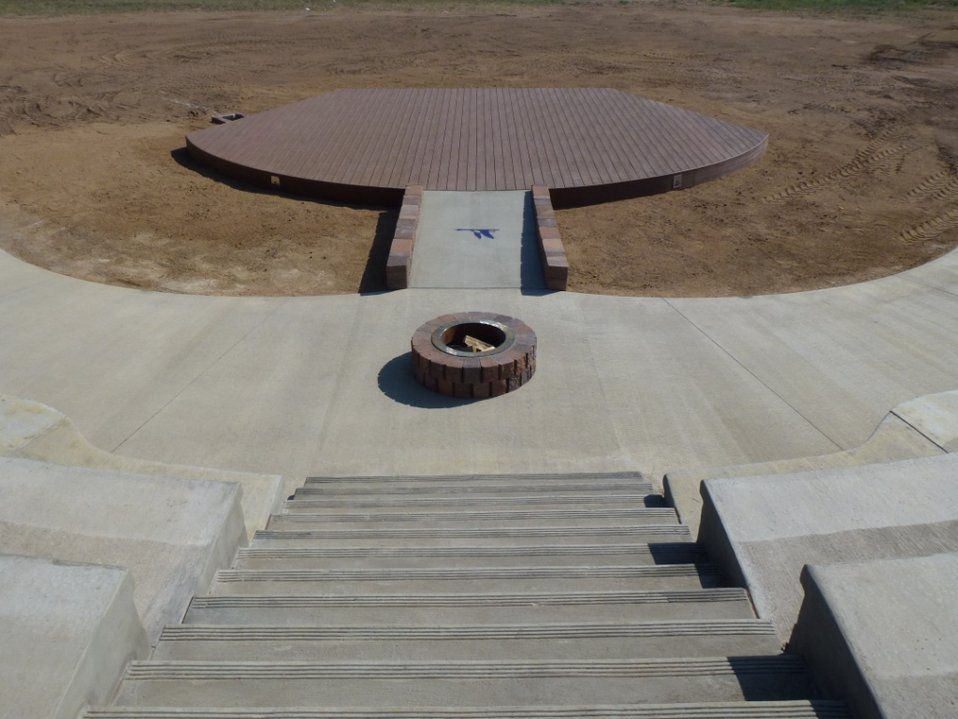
Rocky Mountain Arsenal National Wildlife Refuge’s Amphitheater

Thanks to the work of a Mountain-Prairie Region Refuge Maintenance Action Team (MAT), a new amphitheater was recently erected adjacent to the Rocky Mountain Arsenal National Wildlife Refuge’s visitor center in Commerce City, Colo.

The amphitheater is a fully accessible facility with seating for 175 to 200 spectators. It features a stage and fire pit for special programs. The addition of the amphitheater to the visitor center will enhance interpretive program delivery as part of the facility’s regular visitor services and will be used for special events. Commerce City has also expressed an interest in using the amphitheater for programs of its own.

The project was completed under budget and cost nearly half as much as the bids received from private contractors. According to rough estimates, the U.S. Fish & Wildlife Service saved approximately $70,000. The substantial cost savings was realized by employing the MAT, which is comprised of in-house maintenance workers with various skill sets from several stations across the region. Typically, deferred maintenance dollars pay for the project materials, labor, travel, room and board of MAT members. MAT projects usually take between one to five weeks to complete.

Construction began May 7, 2012 and concluded June 13, 2012 with a one-week pause in the middle of the project to allow MAT members a break. In total, the project took 34 12-hour-work days. The MAT worked more than 2,000 man hours on the project with no time lost due to injury or any safety-related issues.

The Refuge MAT consisted of:
• Rich Iwanski – Bear River Migratory Bird Refuge – Engineering Equipment Operator – Pre-construction organization, MAT team foreman, Equipment Operator and other general work.
• Cameron Fenrich – Mountain-Prairie Regional Office – Civil Engineer – Project Manager, Project Engineer, amphitheater design, on-site inspections, general construction work and overall construction and MAT team organization.
• Steve Raney – Baca National Wildlife Refuge – Maintenance Worker - Equipment Operator and other general work.
• Justin Wanzek – Valley City Wetland Management District – Maintenance Worker- Equipment Operator and other general work.
• Delbert “Skip” Palmer – Lee Metcalf National Wildlife Refuge – Maintenance Worker - Concrete Specialist and other general work.
• Tom Ronning – Rocky Mountain Arsenal National Wildlife Refuge – Range Conservationist - Truck Driver and other general work.